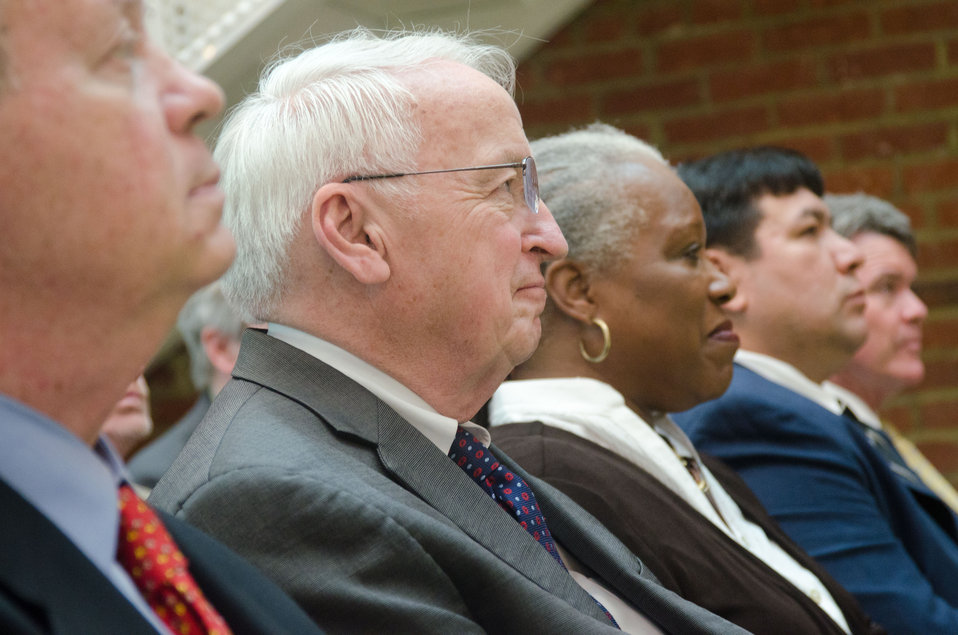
Under Secretary for Food, Nutrition and Consumer Services Kevin Concannon (second from left) attended Agriculture Secretary Tom Vilsack’s announcement on Friday, April 29, 20ll in Washington, DC, at Bread for the City, that the U.S. Department of Agriculture and he, are committed to ending childhood hunger. Secretary Vilsack presented USDA's resources to champion the end of hunger and create innovative partnerships to address hunger, especially among children. Vilsack informed the audience that USDA has made available to individuals, groups and communities the tools and technical assistants to become champions themselves in ending childhood hunger. He shared the web address www.fns.usda.gov/ech, where people can participate in an online commitment for that cause and identified actions that can be taken. When a person registers as a Stakeholder, they, their group or community can be kept informed and have input about ending childhood hunger. A follow-on link to ' www.serve.gov"; can assist a person in finding volunteer opportunities in their area; register an unlisted program; share a story about a volunteer project or personal experience; and help get the word out about United We Serve.